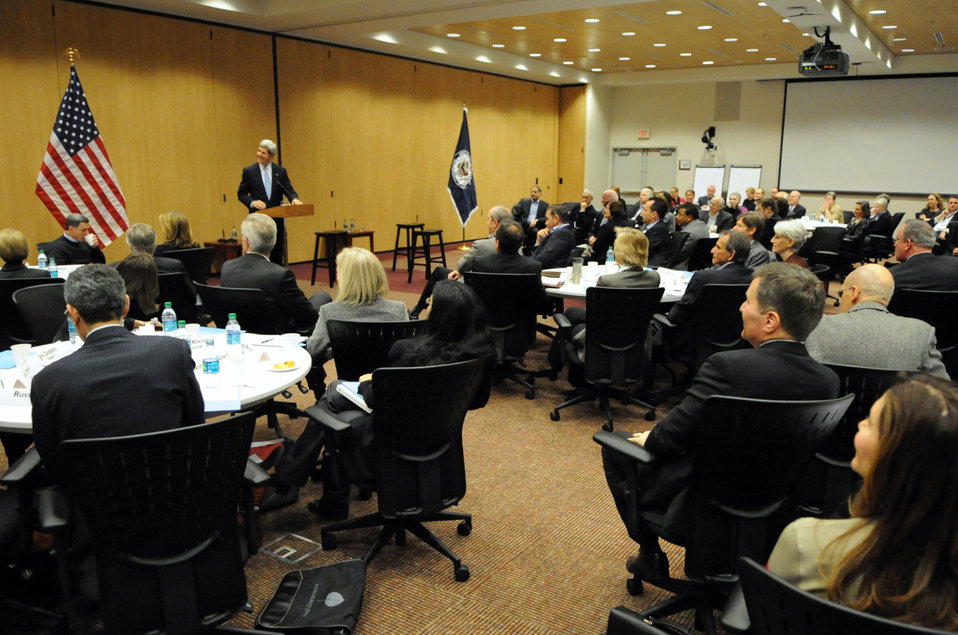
Secretary Kerry Addresses Senior Managers at Daylong Staff Retreat

U.S. Secretary of State John Kerry opens a daylong retreat for about 100 State Department senior managers during a gathering in Arlington, Virginia, on February 10, 2014.